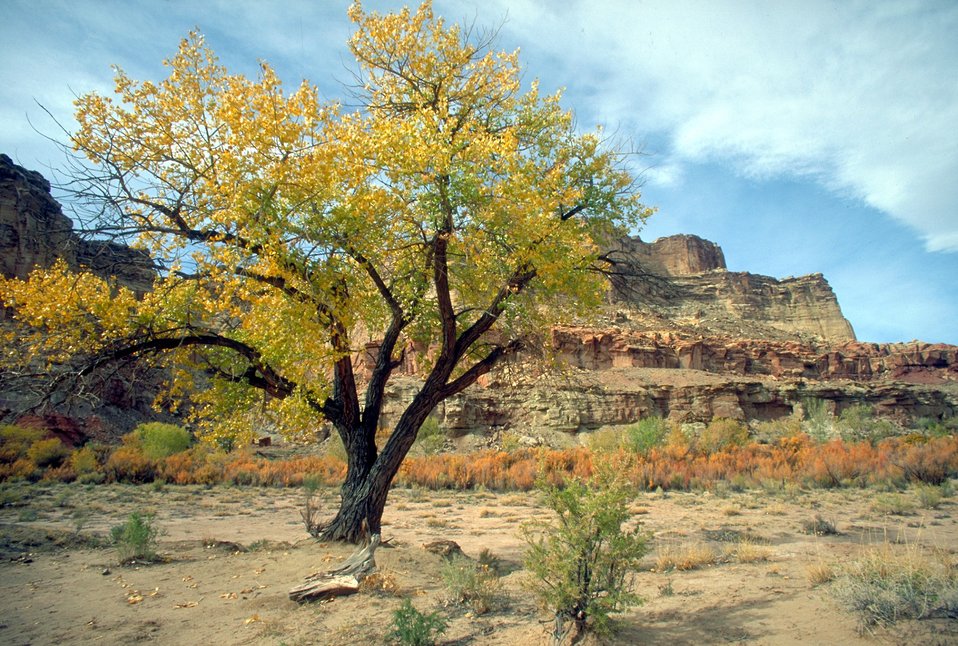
Red Canyon Loop, San Rafael Swell.